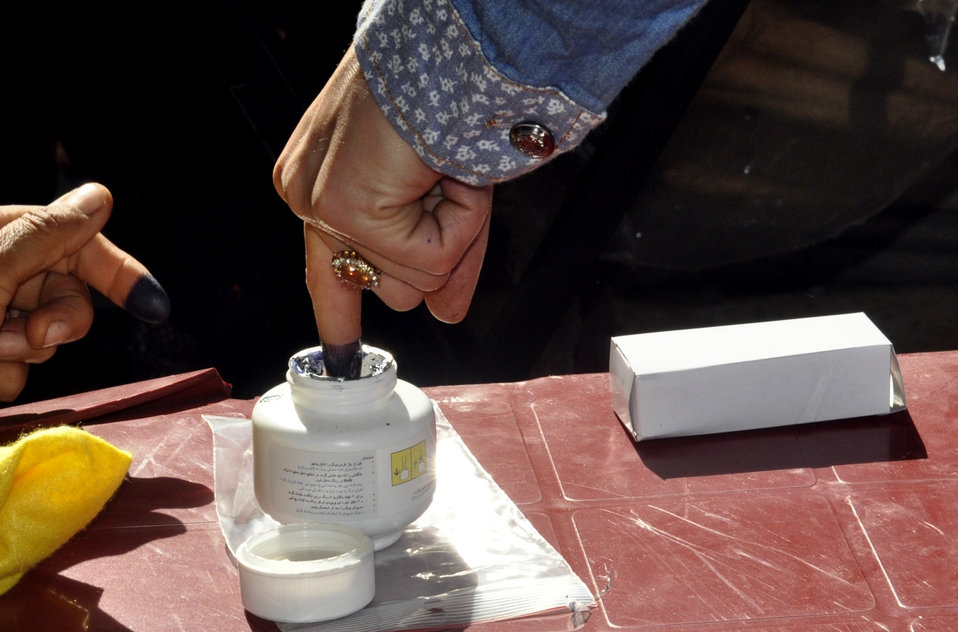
A woman inks her finger at a polling center in Kabul.